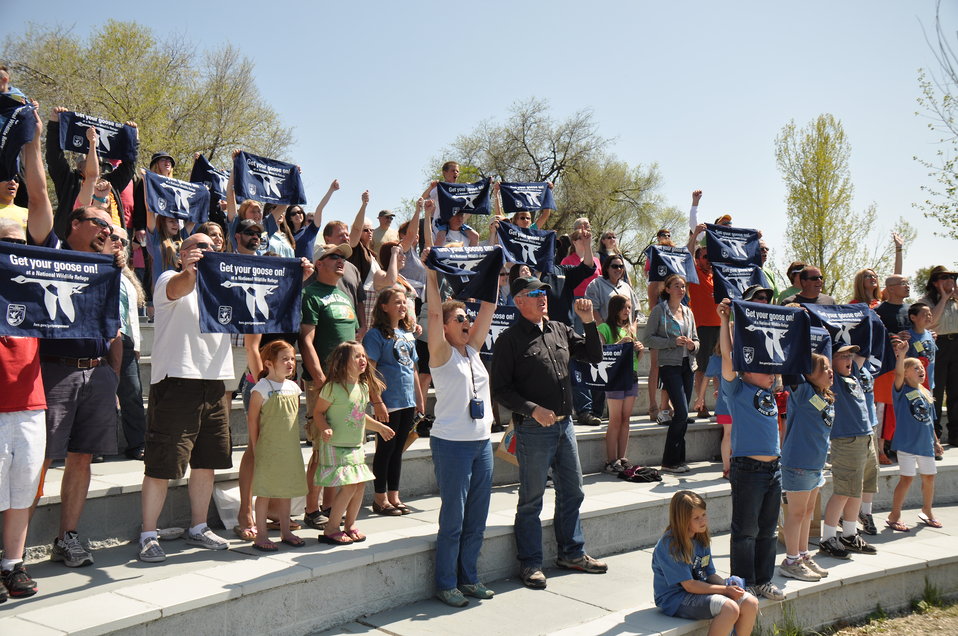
Get Your Goose On!!!

More than 100 people attended the 2012 Montana Junior Duck Stamps award ceremony. The folks pictured here posed with their towels as a videographer captured footage of them screaming, in unison, 'Get Your Goose On!'